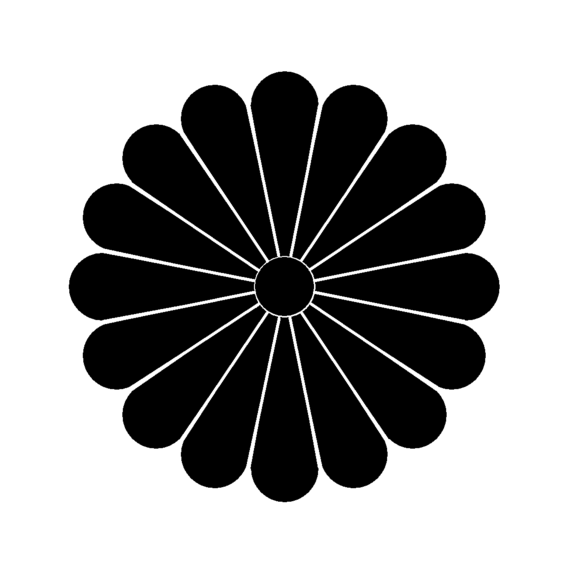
菊花紋の一例（十六菊）